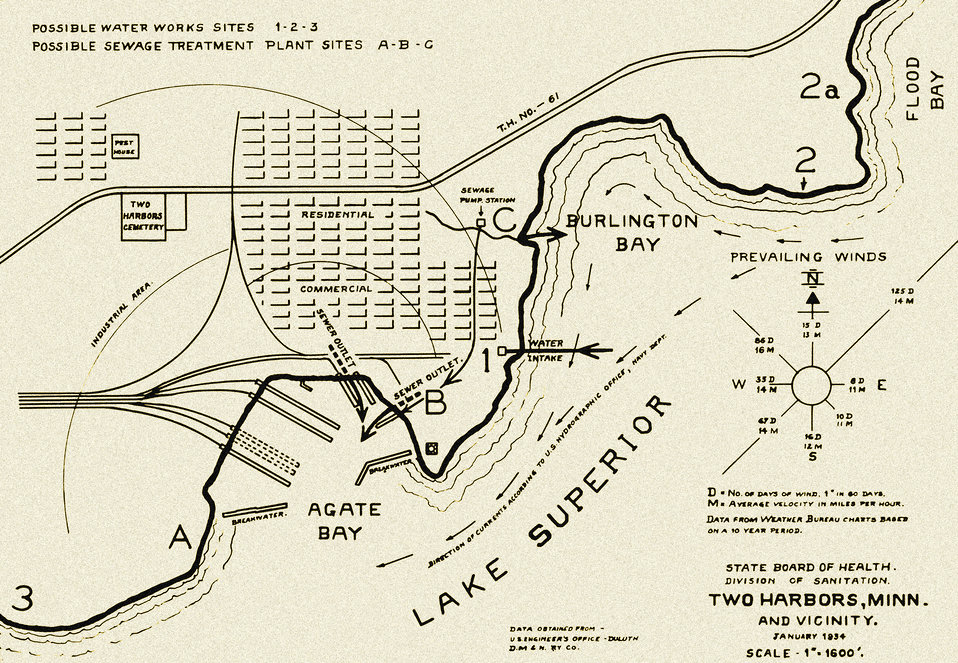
This historic 1917 map, which had been digitally enhanced an colorized, depicted the system of water intake, and sewer outlet into Lake Superior at Two Harbors, Minnesota.